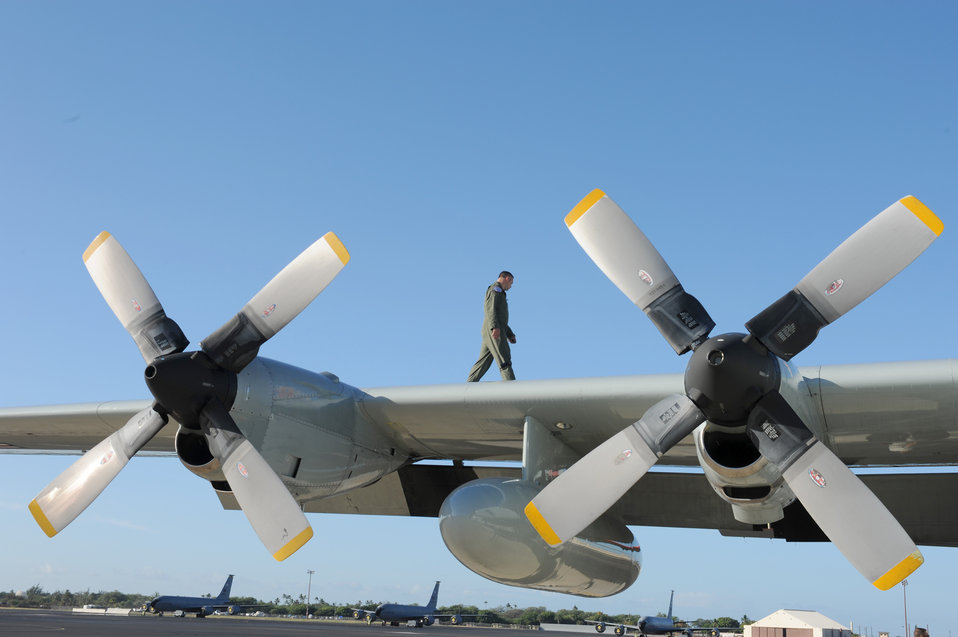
Wingwalking, Hawaiian style

A 109th Aircraft Maintenance Squadron crew chief from Stratton Air National Guard Base, N.Y., performs a pre-flight inspection on an LC-130 Hercules at Joint Base Pearl Harbor-Hickam, Hawaii, Oct. 18, 2010. The LC-130 is headed to Antarctica for Operation Deep Freeze.